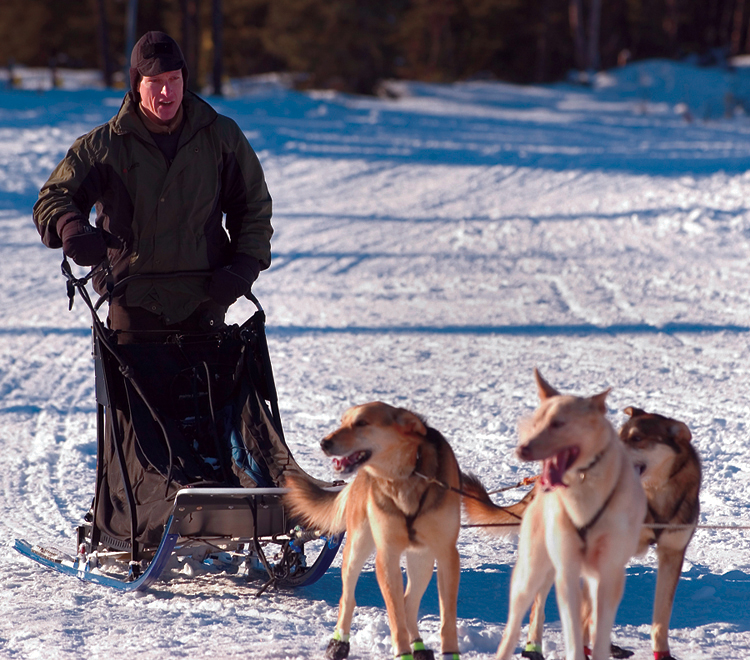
Elmendorf doctor to lead pack in Iditarod

CHUGIAK, Alaska -- Maj. (Dr.) Thomas Knolmayer prepares for a training run with his dog team Feb. 27. On March 5, he will be the only active-duty servicemember to begin the 1,131-mile Iditarod sled dog race from Anchorage to Nome. Dr. Knolmayer is the 3rd Medical Group's chief of surgery at nearby Elmendorf Air Force Base.